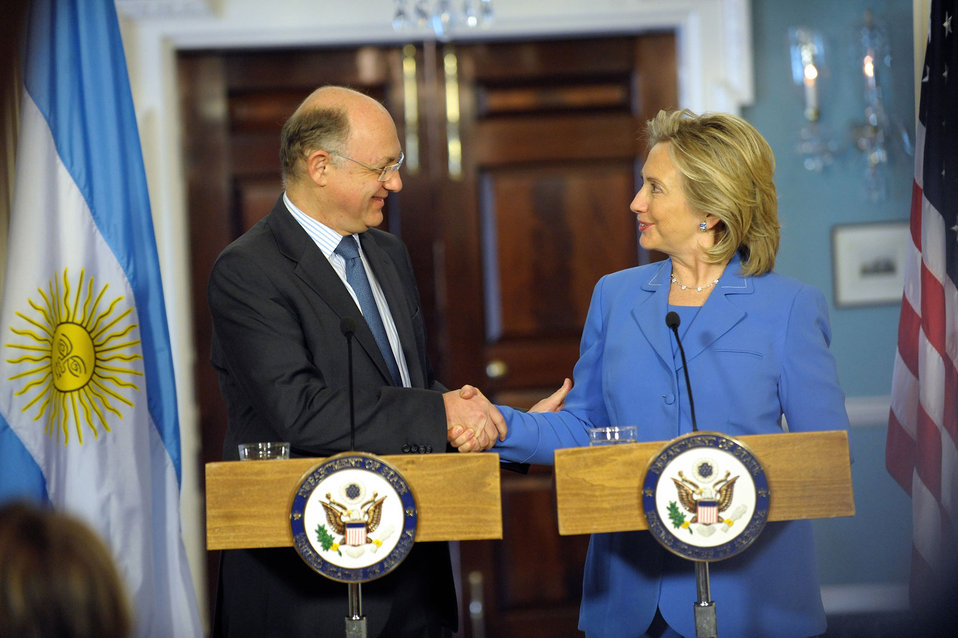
Secretary Clinton Shakes Hands With Argentine Foreign Minister Timerman

U.S. Secretary of State Hillary Rodham Clinton shakes hands with Argentine Foreign Minister Hector Timerman following their bilateral meeting at the U.S. Department of State in Washington, D.C., on August 11, 2010.